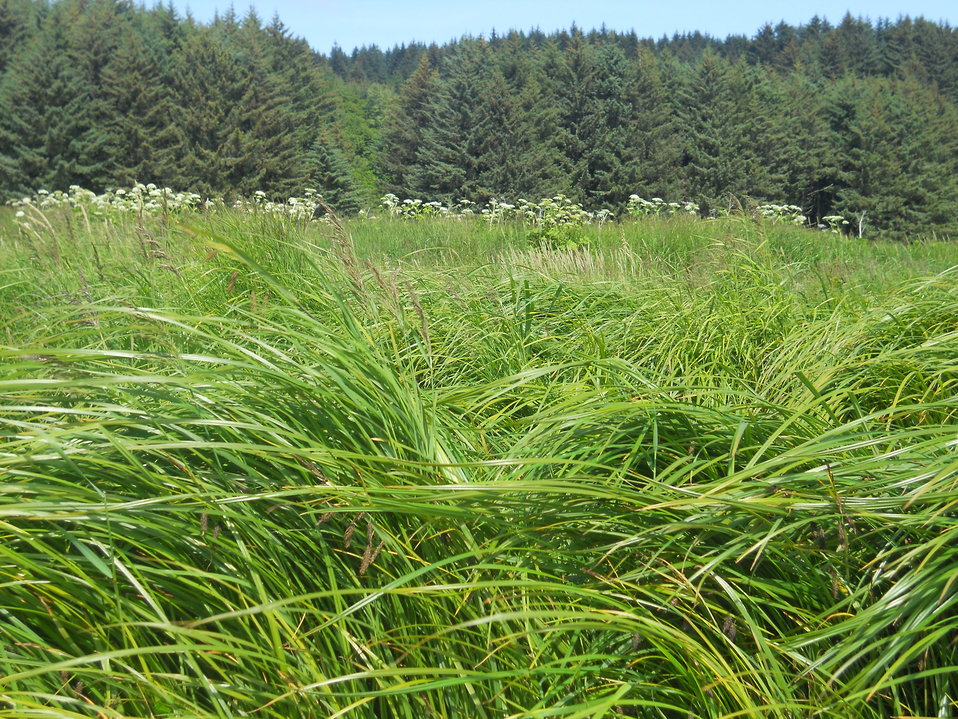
Grass Field

Credit: USFWS
Photo taken by a Salmon Camp participant during a nature photography activity.

Source and Contact: Kodiak National Wildlife Refuge